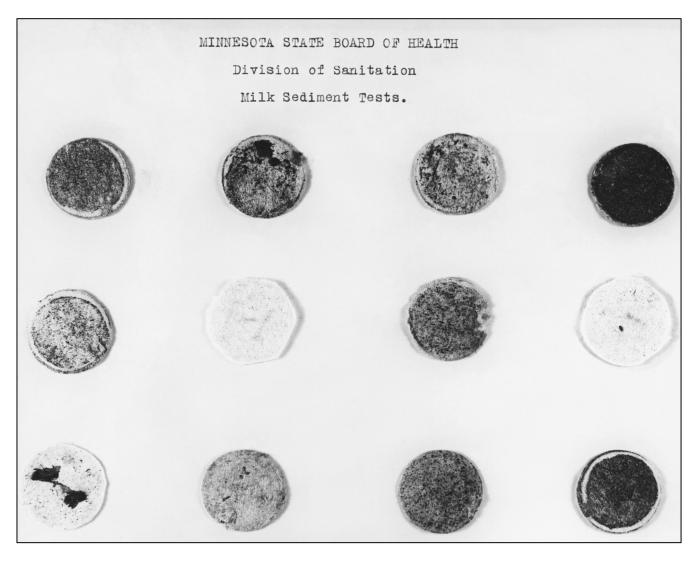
This historic 1922 photograph showed laboratory Petri dishes that contained the results of milk sedimentation tests. The results revealed that 'dirty' milk had been adulterated at some point during its production process.